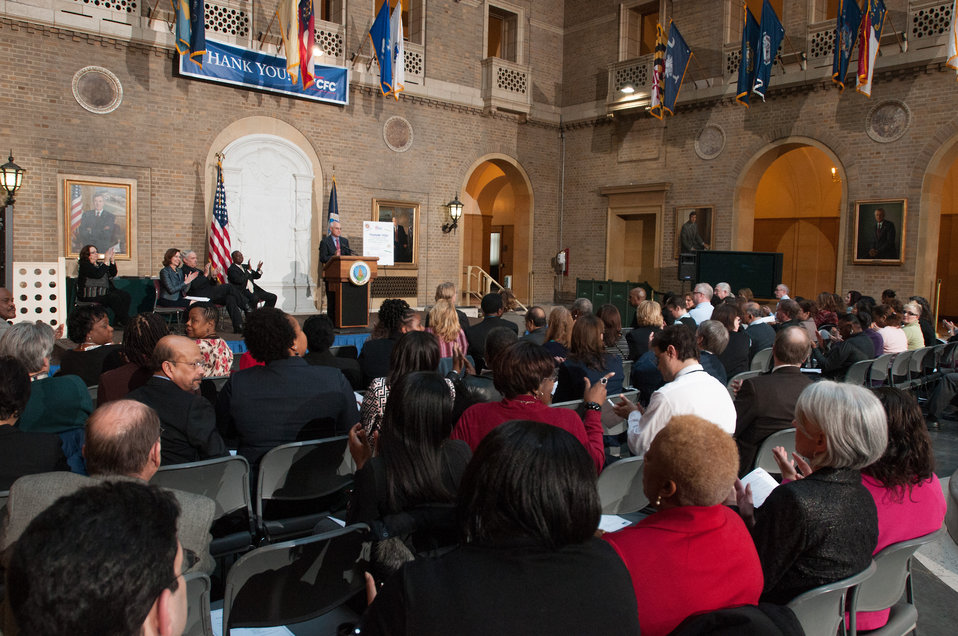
U.S. Department of Agriculture (USDA) Natural Resources and Environment Under Secretary Harris Sherman acknowledges all those who donated and volunteer coordinators, during the 2012 Combined Federal Campaign Awards Ceremony, Thursday, Mar. 21, 2013, at the Whitten Building Patio, in Washington D.C.